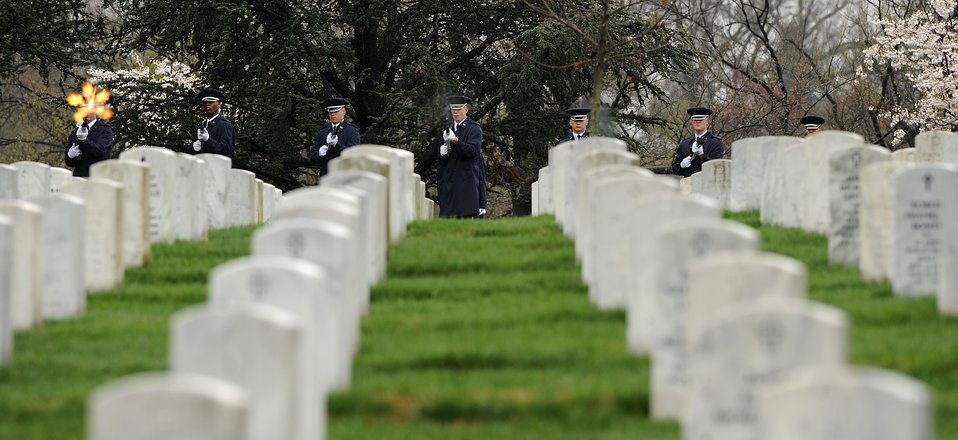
Maj. Gen. Jeanne M. Holm Funeral

A U.S. Air Force Honor Guard detail fires a rifle volley March 29, 2010, during the full-honors funeral of Maj. Gen. Jeanne M. Holm in Arlington National Cemetery. She was promoted to major general with an effective date of July 1, 1970, and was the first woman in the Armed Forces to serve in that grade.